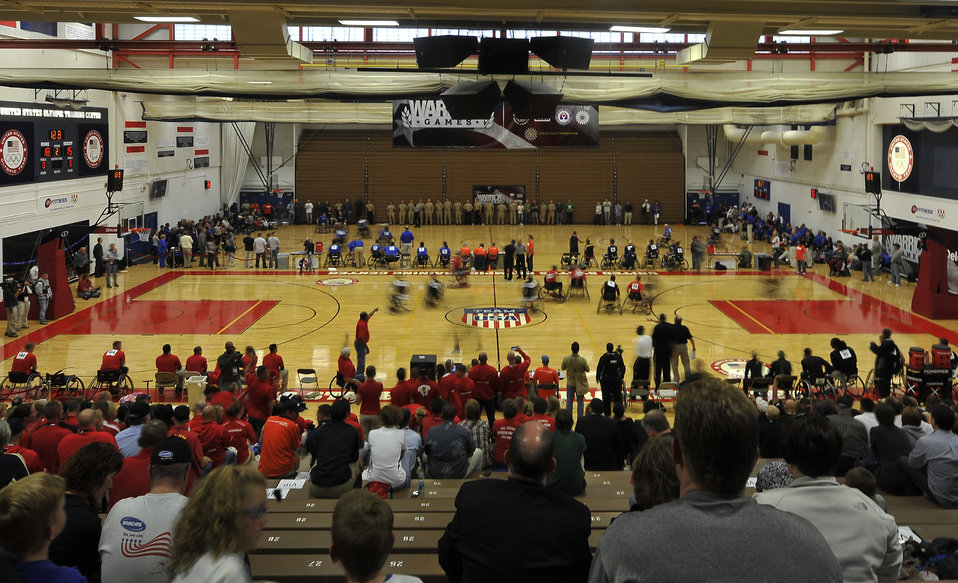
Warrior Games BasketBall

The Air Force and Navy face off on court 1 while the Army battles the Marine Corps on court 2 during the first day of wheelchair basketball competition May 17. The Army beat the Marine Corps 39-24 and the Navy beat the Air Force 23-14.